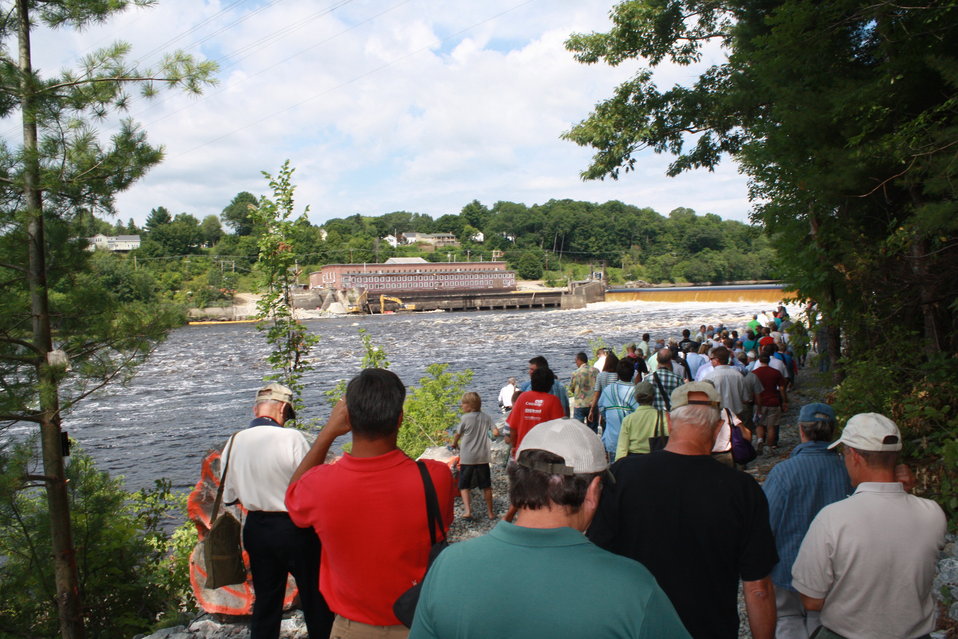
Veazie Dam Removal

More than 300 excited spectators gathered to watch the breaching of Veazie Dam.